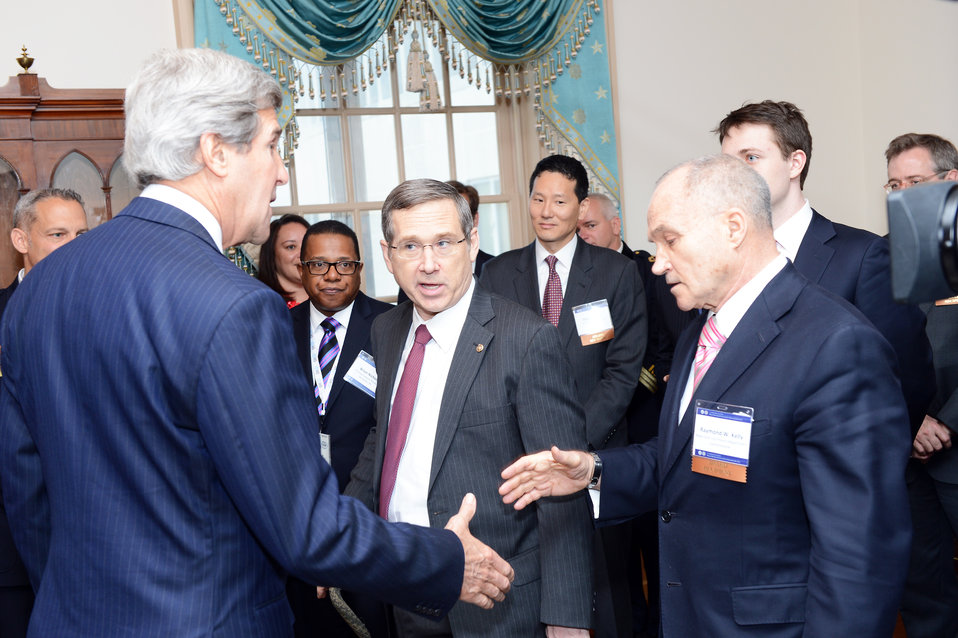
Secretary Kerry Shakes Hands With NYPD's Police Commissioner Kelly

U.S. Secretary of State John Kerry shakes hands with Raymond Kelly, Commissioner of the New York City Police Department (NYPD), at the U.S. Department of State in Washington, D.C., on May 13, 2013. The NYPD received the first Secretary of State Award for Excellence in Overseas Criminal Justice Assistance for training assistance in Haiti.